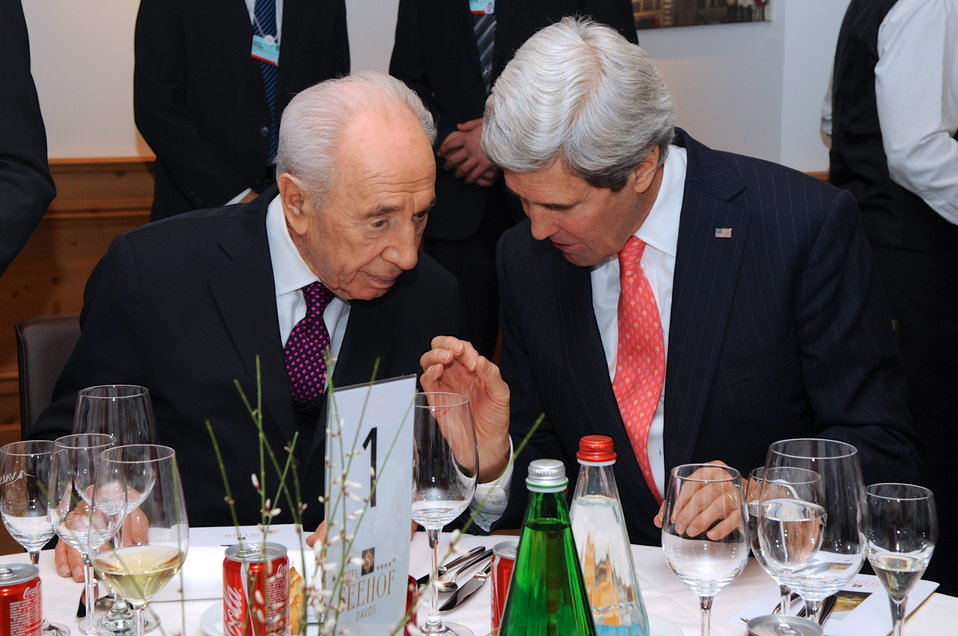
Secretary Kerry Speaks With Israeli President Peres in Davos

U.S. Secretary of State John Kerry speaks with Israeli President Shimon Peres during a dinner hosted by Coca-Cola CEO Muhtar Kent on the sidelines of the World Economic Forum in Davos, Switzerland, on January 23, 2014.